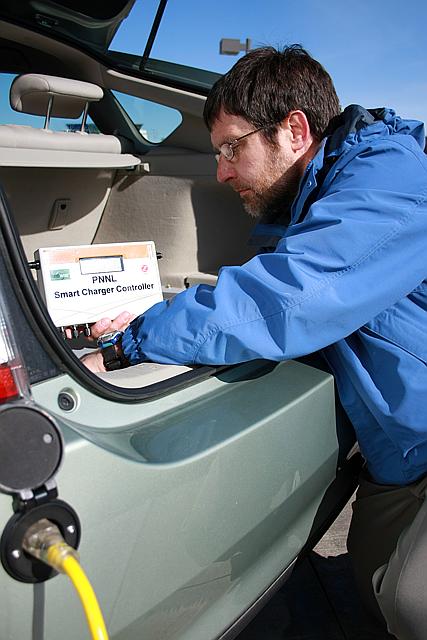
Pacific Northwest National Laboratory engineer assesses installation of the Smart Charger Controller device into a Toyota Prius plug-in hybrid electric vehicle (PHEV) provided by Energy Northwest. the Controller tells the car's battery when to smart and stop re-charging based upon existing stress in the electric grid.